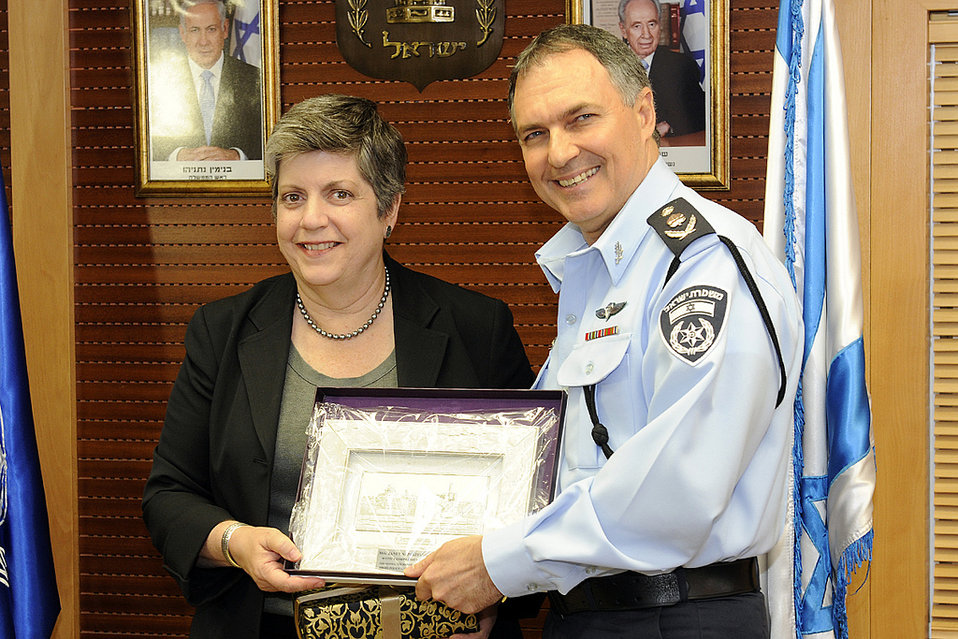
Secretary Napolitano Visits Israel

U.S. Secretary of Homeland Security Janet Napolitano visits Israel, May 20-22.